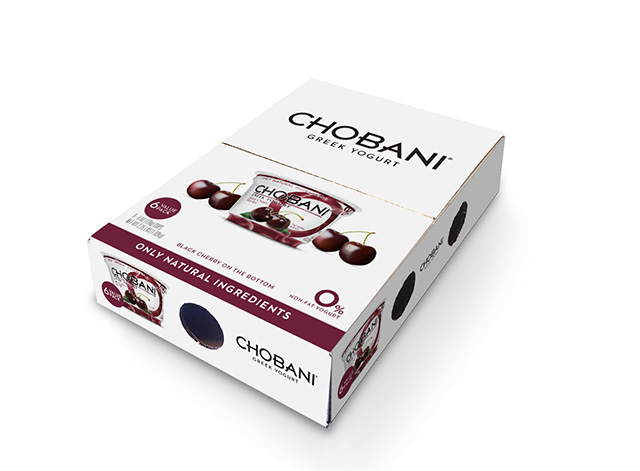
RECALLED – Greek yogurt products

September 6, 2013 – Product Recall – Chobani, Inc. Voluntarily Recalls Greek Yogurt Because of Product Concerns.